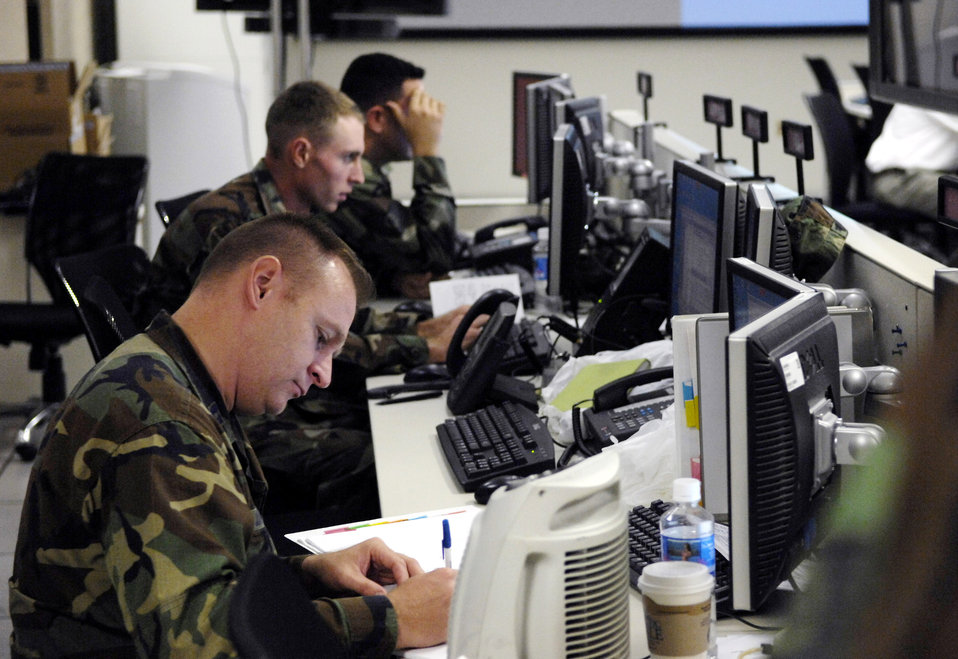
Ops center commands sky during Exercise Valiant Shield

Members of the intelligence, surveillance and reconnaissance division provide intel to the chief of operations during Exercise Valiant Shield Aug. 7 in the Air and Space Operation Center at Hickam Air Force Base, Hawaii. The Airmen are from the 613th Air Operations Center. Valiant Shield is a week-long exercise that tests the military's ability to rapidly consolidate joint forces in response to regional contingencies, involves approximately 22,000 troops, 30 ships and some 275 aircraft.